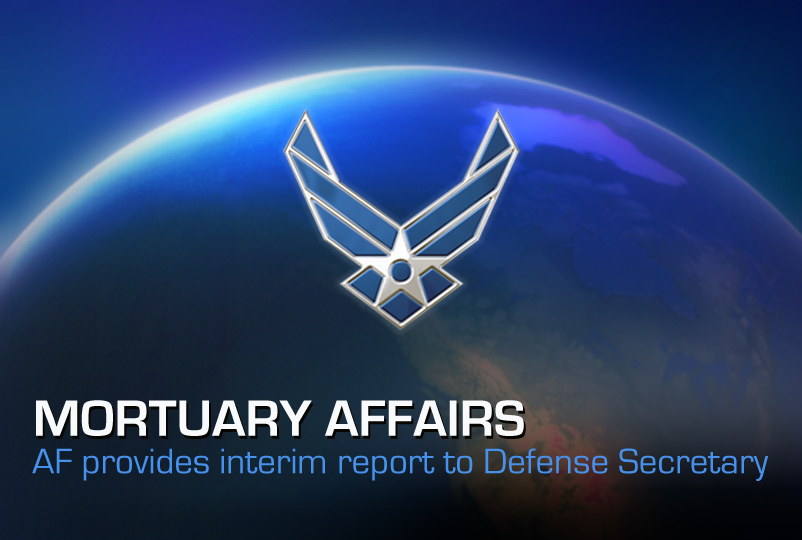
Mortuary Affairs